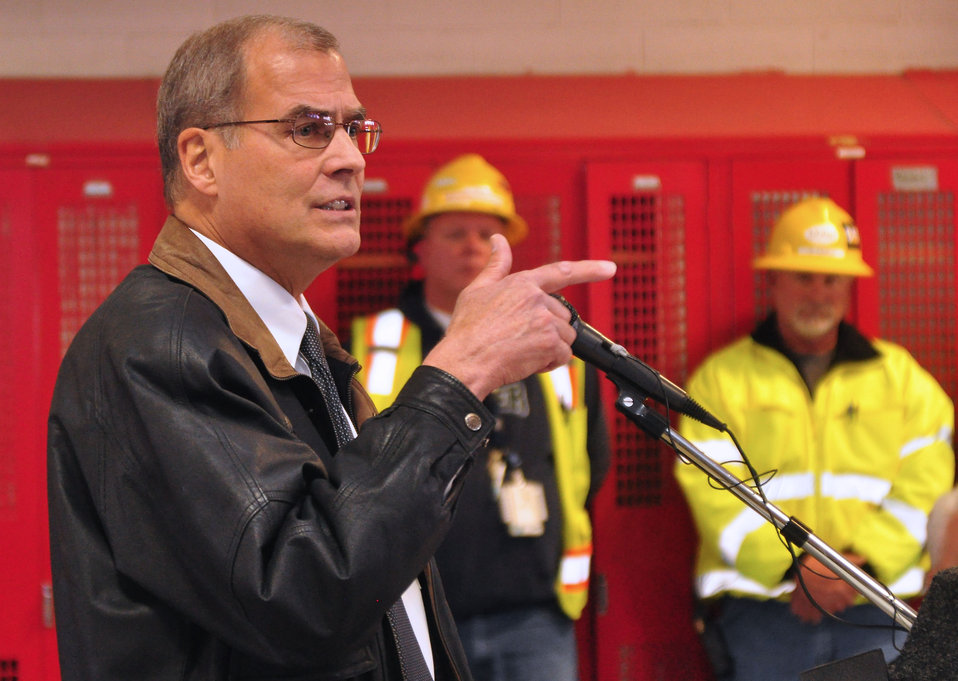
Last Part of K-25 Coming Down Oak Ridge 2013

13-157-1 DOE photo Lynn Freeny 12-19-2013 Jim Kopotic EM Federal Project Director for ETTP Oak Ridge Tennessee